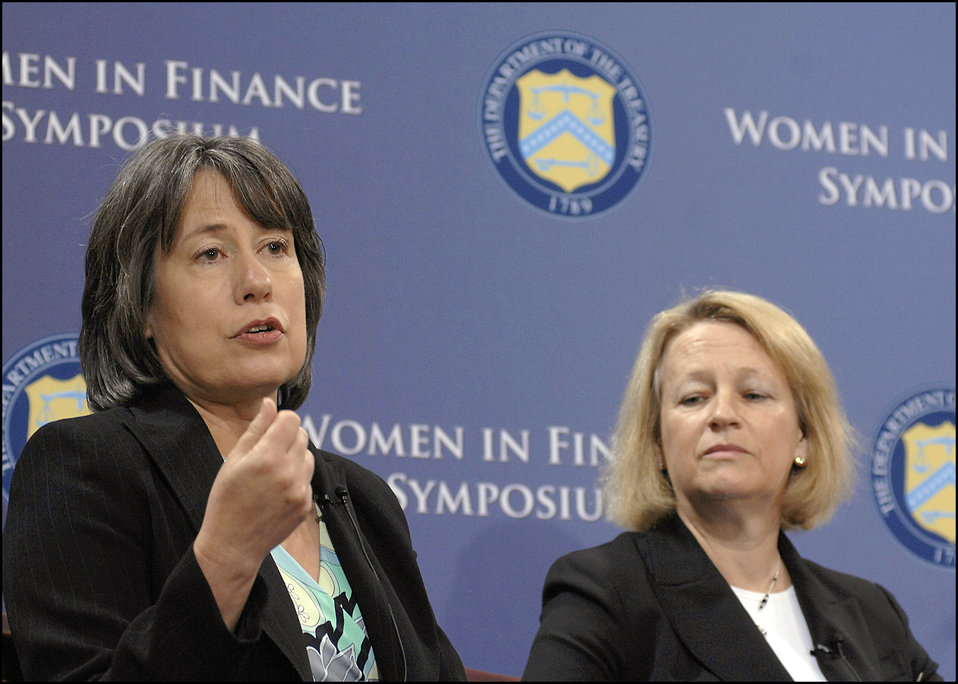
Women in Finance Symposium, 03/29/2010

FDIC Chair Sheila Bair and SEC Chair Mary Schapiro at the Women in Finance Symposium, March 29, 2010.